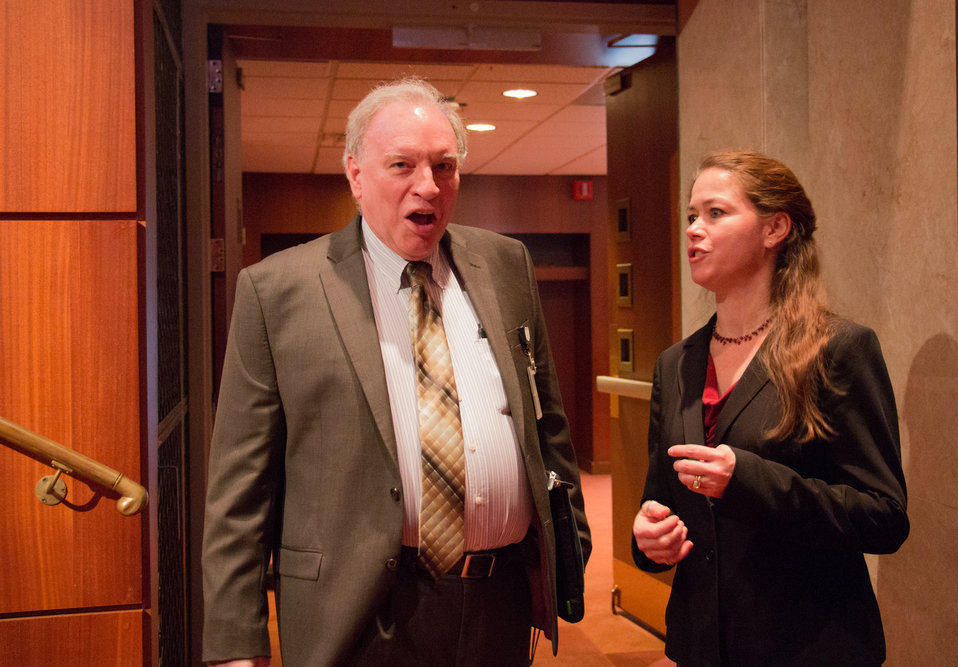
VHAP Launch (383 of 511)